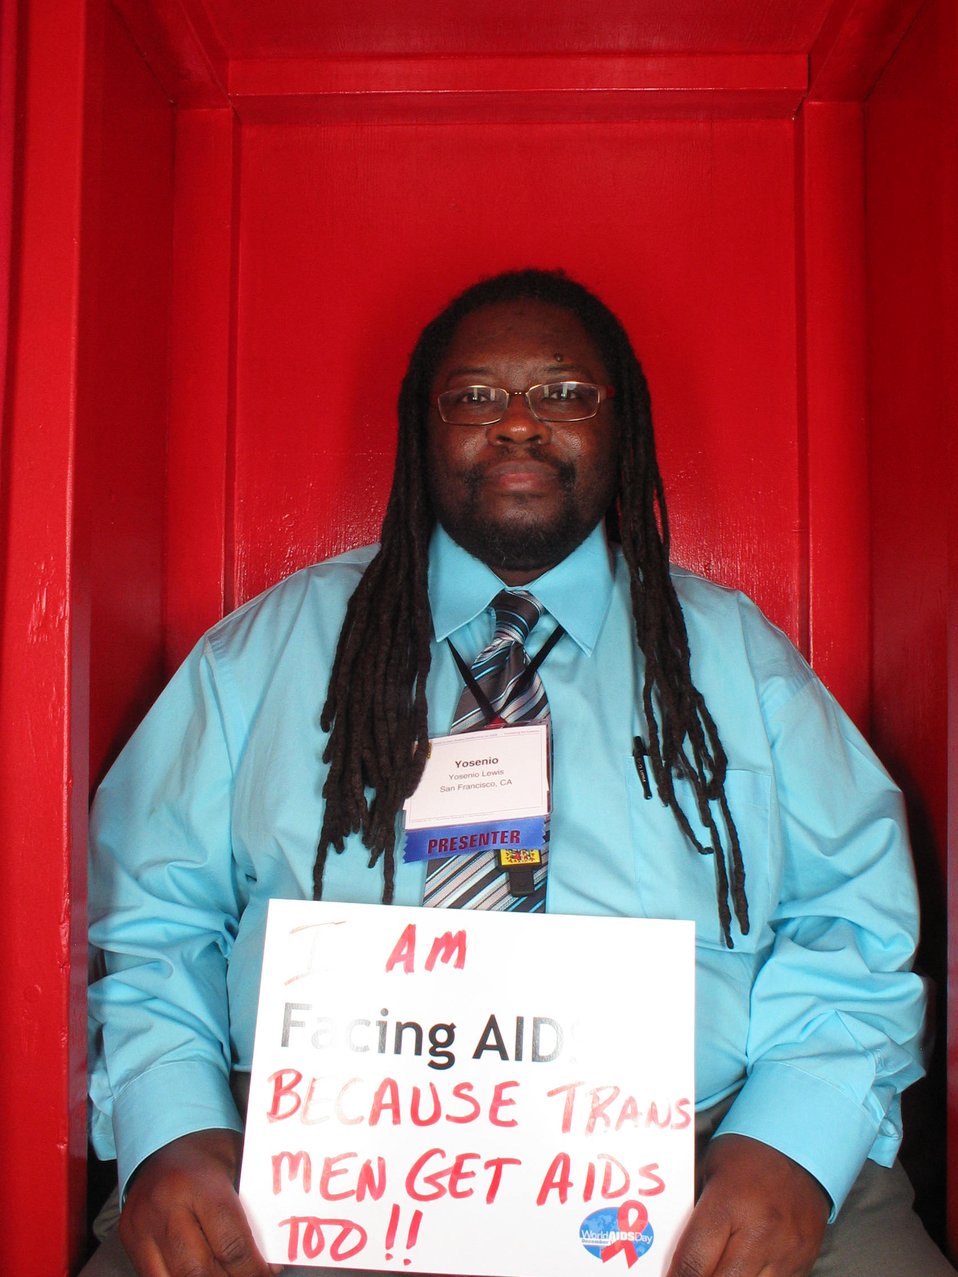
I am Facing AIDS because trans men get AIDS too